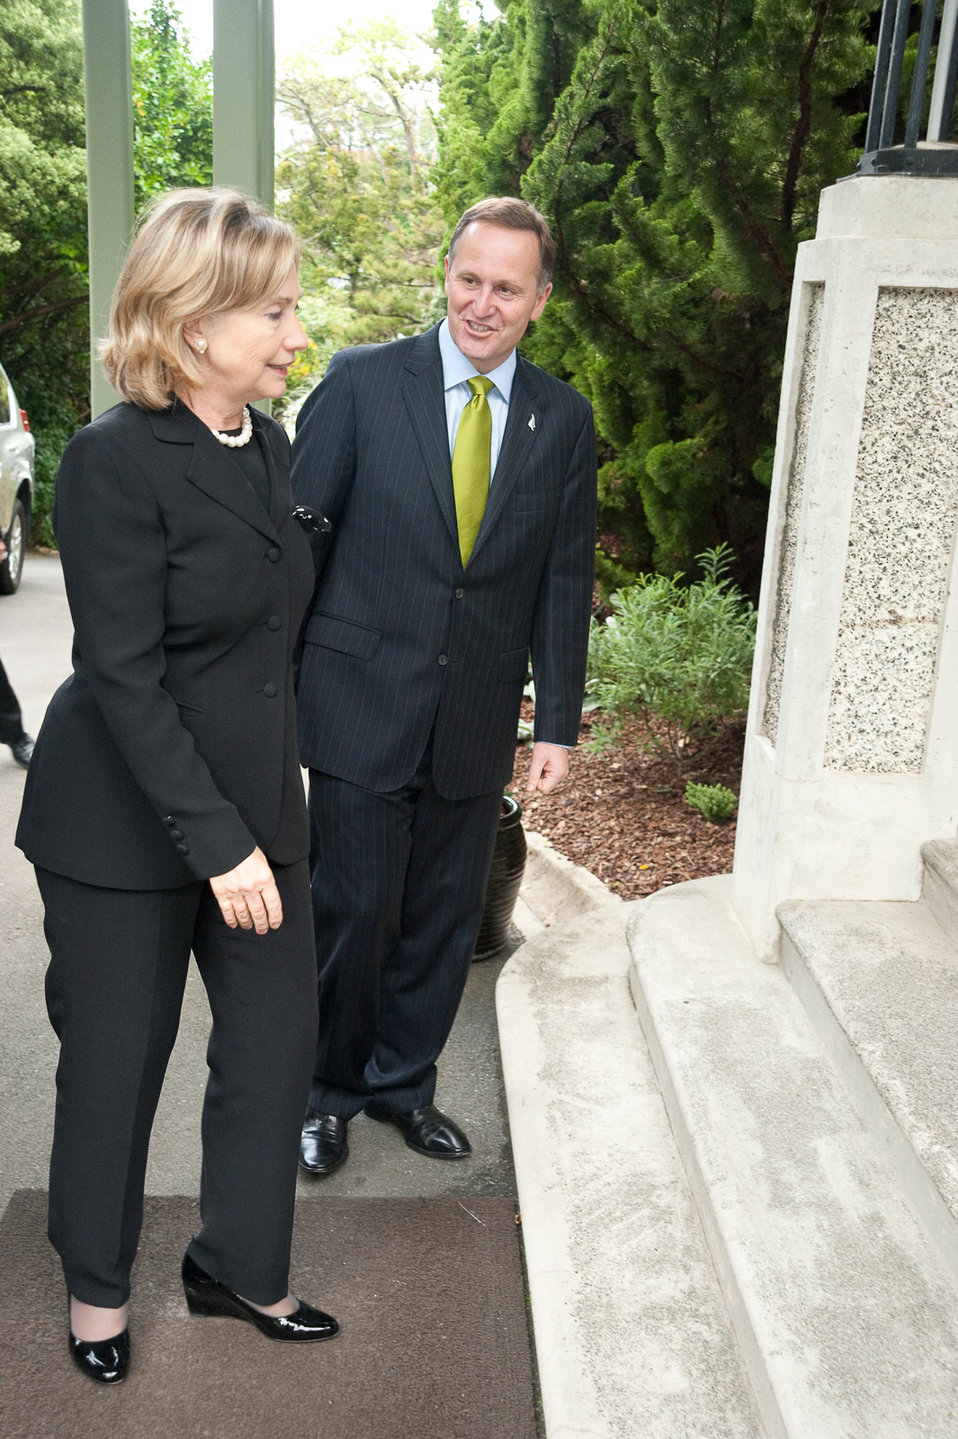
Secretary Clinton Speaks With New Zealand Prime Minister Key

U.S. Secretary of State Hillary Rodham Clinton speaks with New Zealand Prime Minister John Key in Wellington, New Zealand, on November 4, 2010.